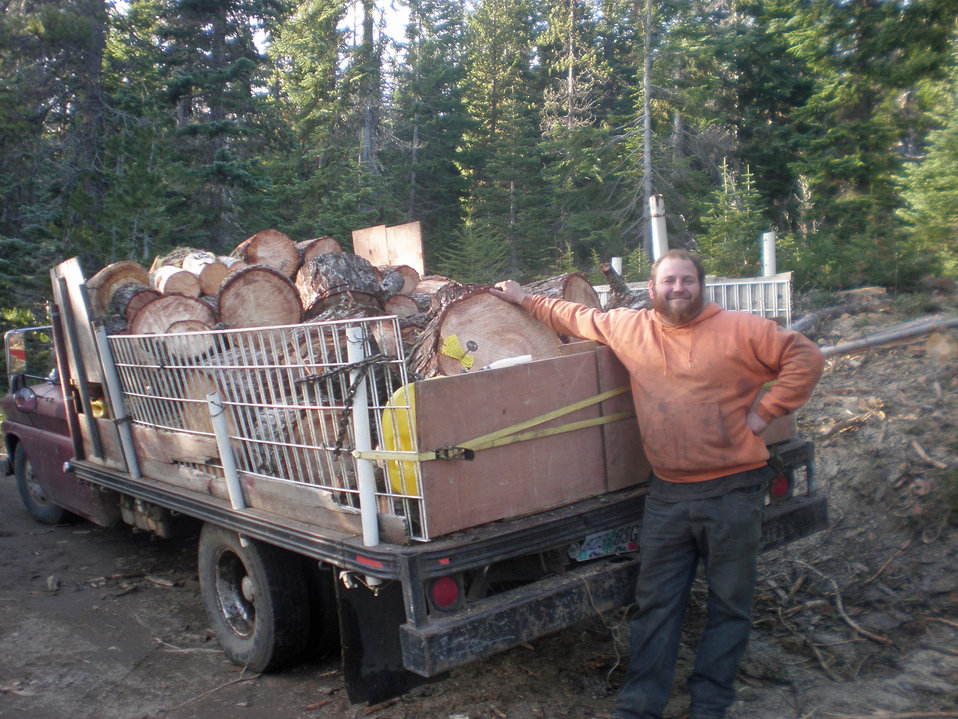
fireplaces full

A firewood gatherer stands proudly with his truckload of cut firewood from the Mt. Hood National Forest in Oregon on Nov. 7, 2012. More than 600 cords of wood were cut and cleared from the Barlow Ranger District National Forest in partnership with Wasco County, OR that were a long-standing safety hazard. The U.S. Forest Service has partnered with the public to provide members of the public with forest products. This U.S. Forest Service partnership aids in restoring overgrown sections of forests, and removing dead and downed wood that reduces the risk of catastrophic fires in the future.